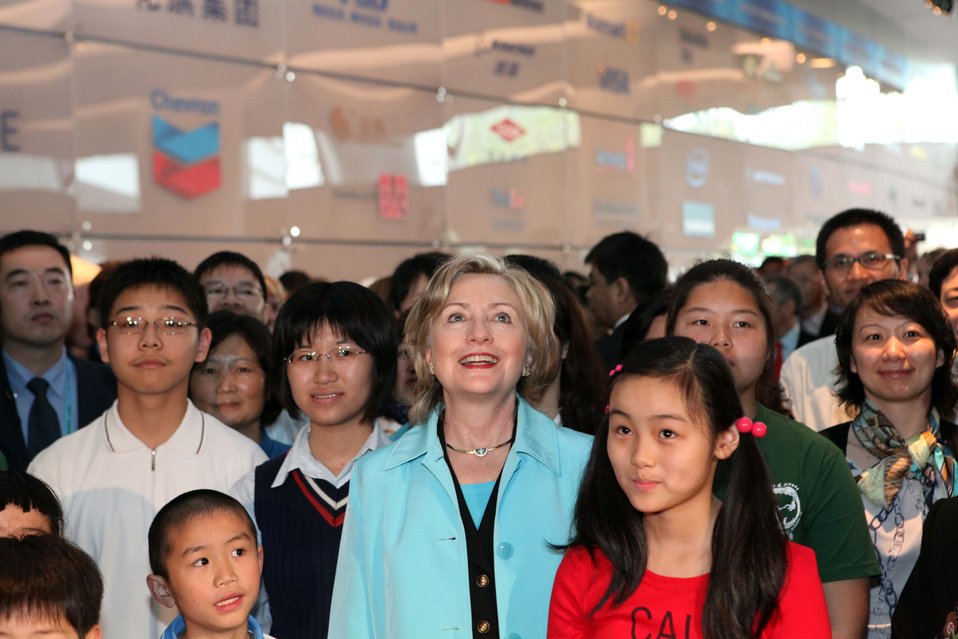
Secretary Clinton Watches Film With Chinese Visitors

U.S. Secretary of State Hillary Rodham Clinton watches the introductory film in the USA Pavilion at the 2010 Shanghai Expo with Chinese Visitors, Shanghai, China, May 22, 2010.